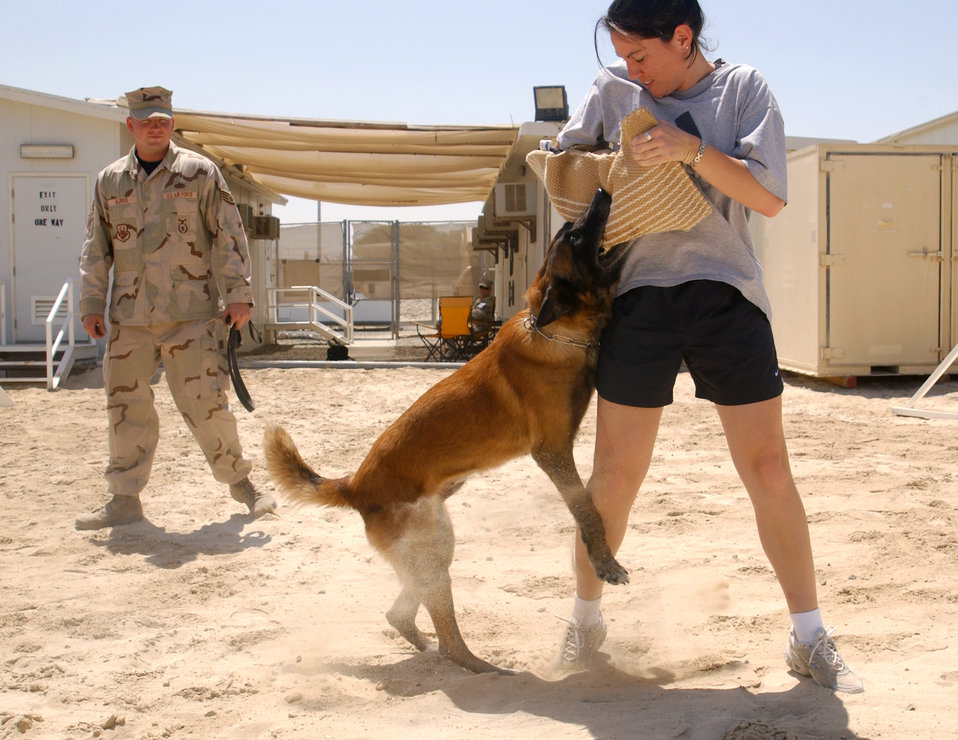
Airmen deploy with four-legged partner

SOUTHWEST ASIA -- Staff Sgt. Thomas Burns watches as Ogar, a military working dog, attempts to take down Staff Sgt. Danielle Carver during training. Six dog handlers are deployed to this forward-deployed location with their dogs. Sergeant Burns and Ogar are deployed from Hickam Air Force Base, Hawaii.